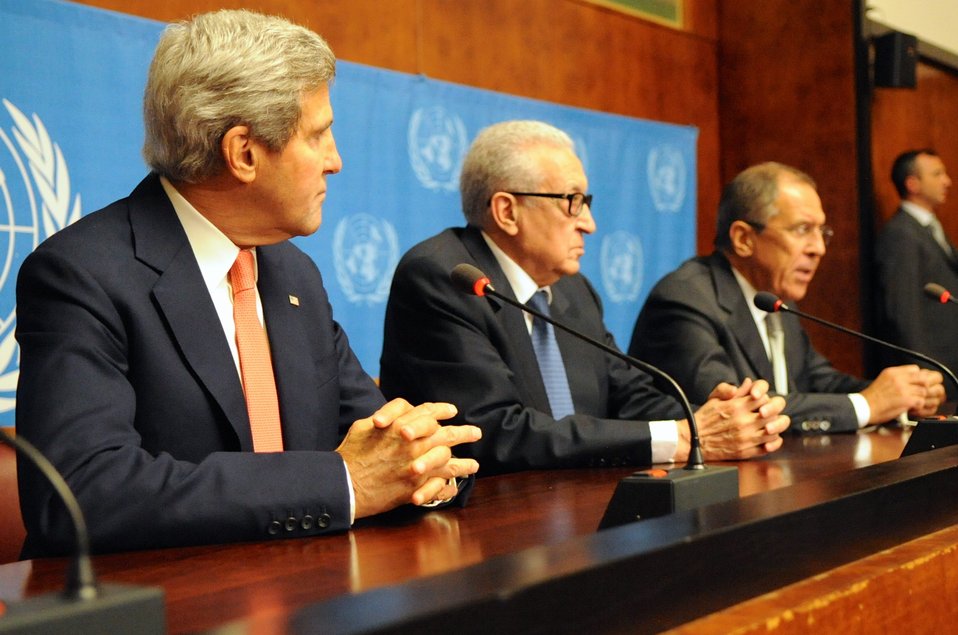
Secretary Kerry, Russian Foreign Minister Lavrov, UN Special Envoy Brahimi Address Press

U.S. Secretary of State John Kerry and United National Special Envoy for Syria Lakhdar Brahimi listen as Russian Foreign Minister Sergey Lavrov discusses efforts to reach a political settlement in the Syrian civil war during a news conference at UN headquarters in Geneva, Switzerland, on September 13, 2013.